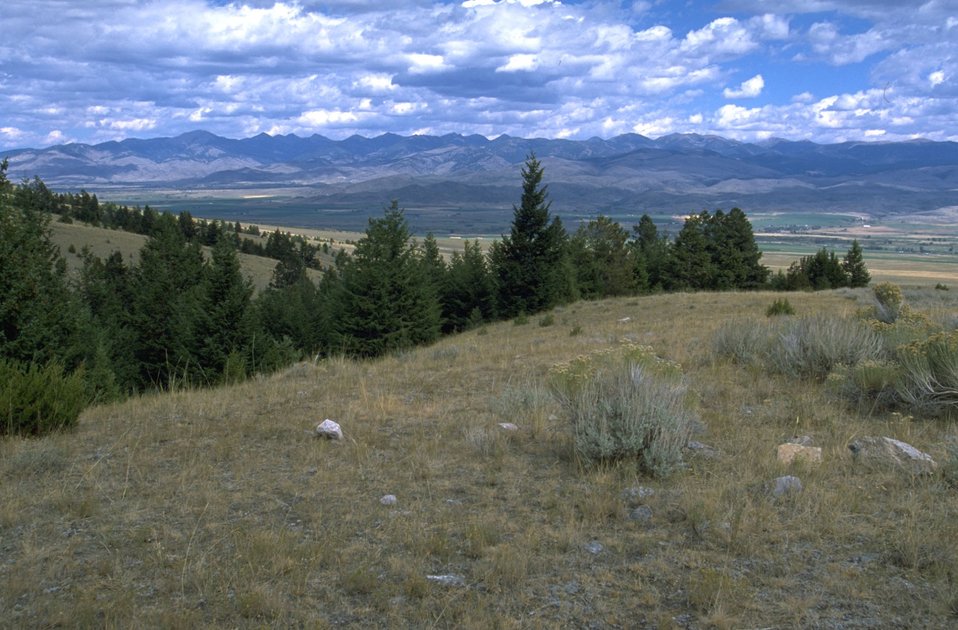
A cloudy day at the Axolotl Lake area with the Spanish Peaks in the background